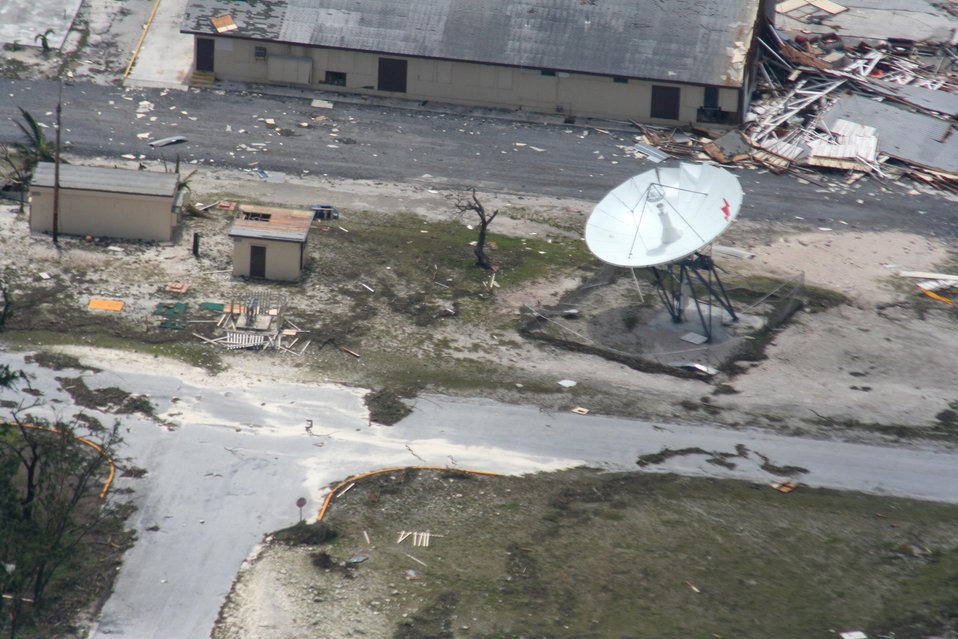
Damage on Wake less than feared, flyover shows

A Sept. 2 flyover of Wake Island by a U.S. Coast Guard aircrew following the passage of Super Typhoon Ioke shows damage to the civil engineer industrial area.